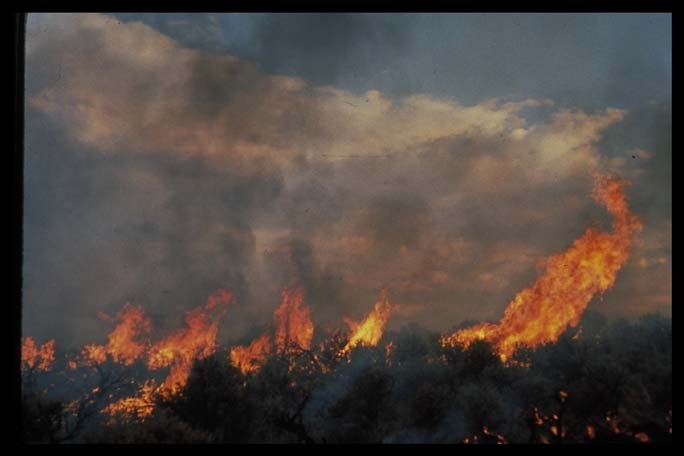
Wildland fire